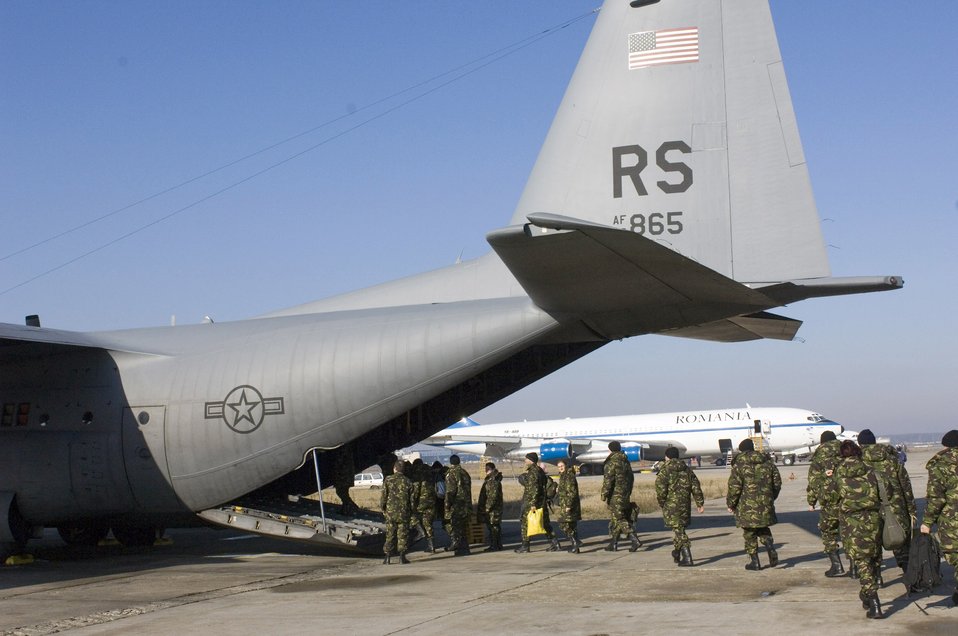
Mission time

BUCHAREST, Romania (AFPN) -- Romanian army soldiers board a C-130 Hercules on their way to Grafenwoehr, Germany, for training. The